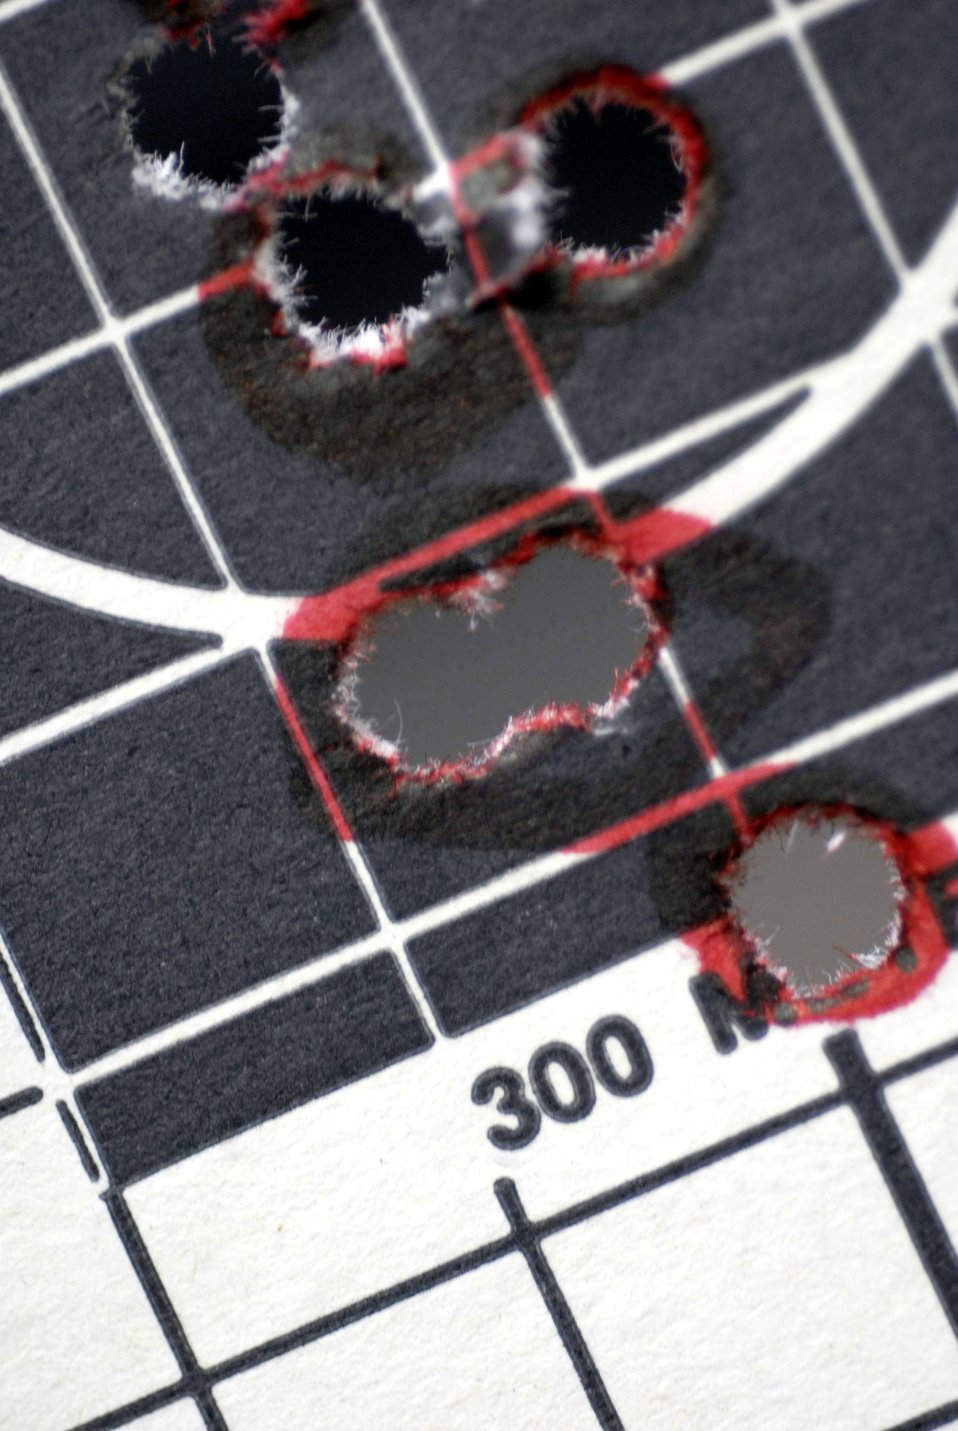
The line is ready, FIRE!

A standard target used for rifle qualification shows the grouping of rounds hit April 12 at Luke Air Force Base, Ariz. Airmen must be qualified in their primary weapon prior to deploying in support of the war on terrorism. There are more than 28,000 Airmen deployed around the world today.